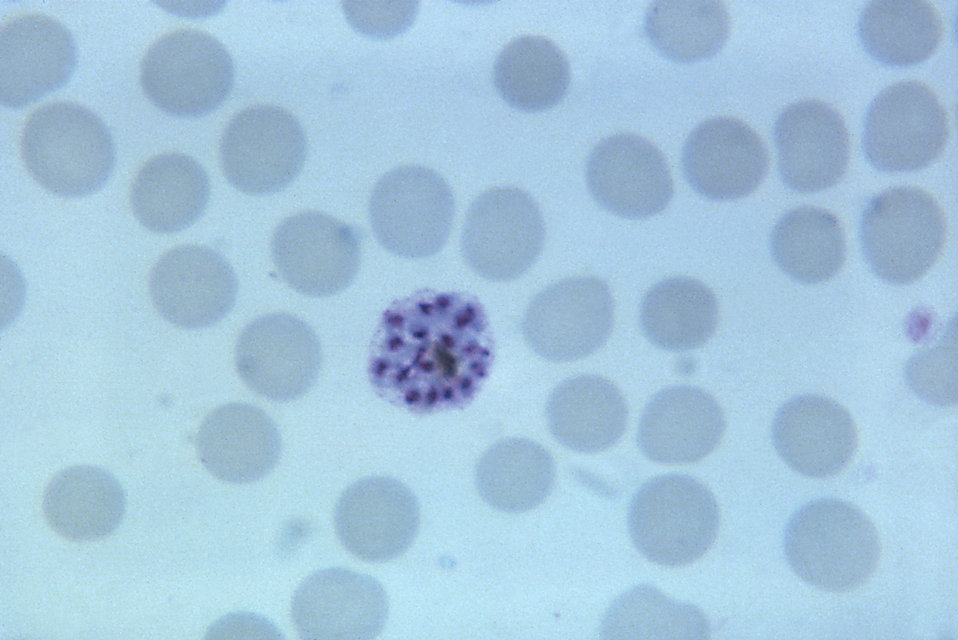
This thin film micrograph revealed a mature Plasmodium vivax schizont containing 18 merozoites; Mag. 1125X.